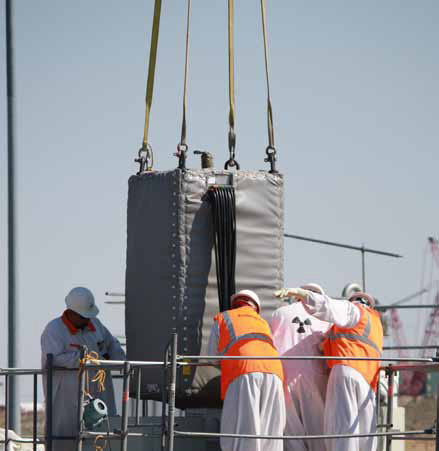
New Enhanced Sluicer Installed

The Hanford Single Shell Tank retrieval and closure team installed an enhanced reach sluicer system into C-112 tank on the week of September 4th. The new sluicer, dubbed the Extended Reach Sluicer System (ERSS), can extend 27 feet across the tank and can spray about 100 gallons per minute at a pressure of 100 pounds per square inch.

Along with a traditional sluicer placed near the roof of the single shell tank, will be used to retrieve the contents of the tank after the completion of all construction activities in November 2011.